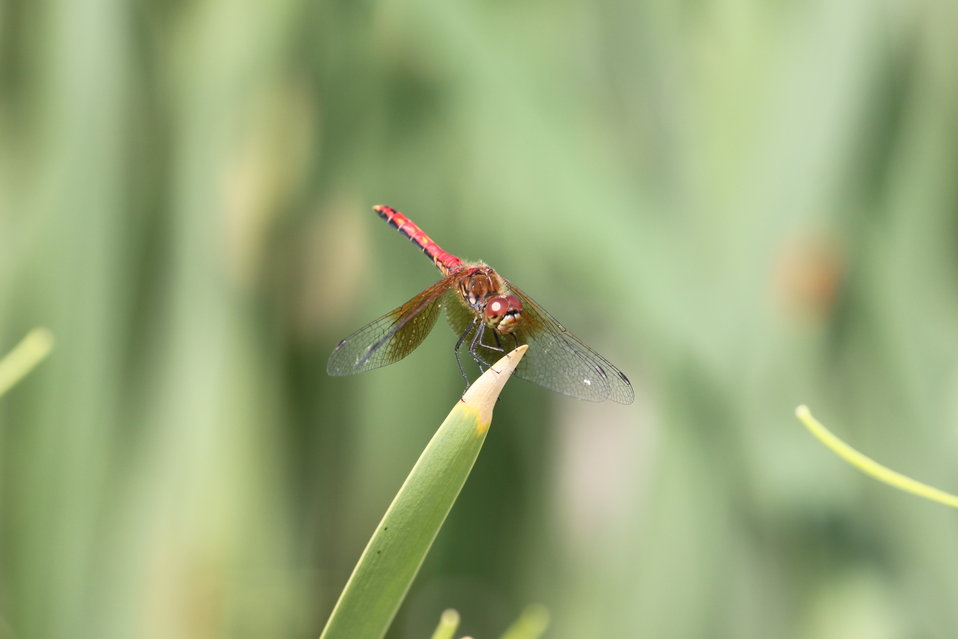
Band-winged Meadowhawk

Sympetrum semicinctum atop cattail blade on wetland perimeter; easy to identify by orange/brown patch at wing bases.